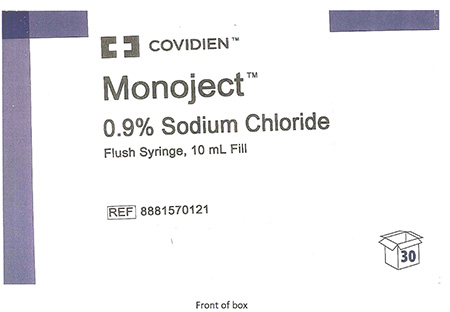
RECALLED – Monoject Prefill Flush Syringes

August 19, 2013 – Product Recall – Covidien Initiates a Voluntary Recall of Certain Lots of Monoject™ Prefill Flush Syringes Sold in the United States and Bermuda.